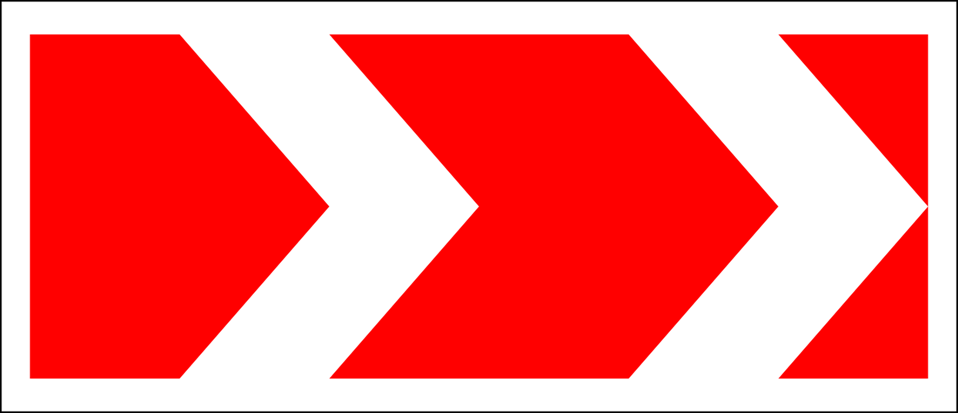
Русский: Дорожный знак 1.34.1 'Направление поворота' Road sign 1.34.1